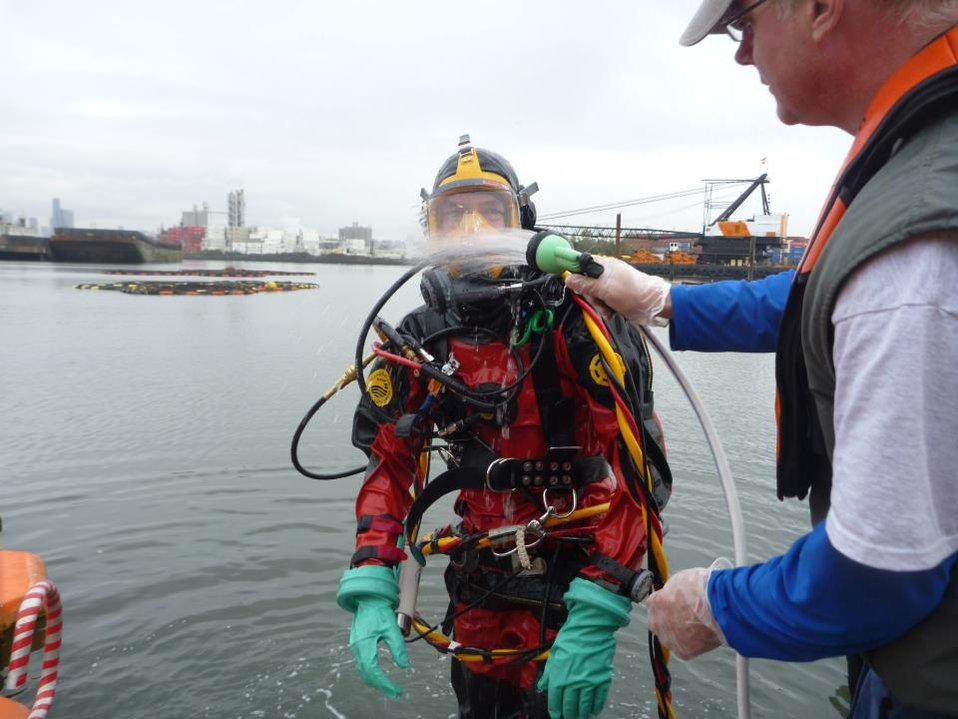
November 13, 2012, Duwamish River, WA Sampling

Due to the river contamination, divers returning to the boat must undergo thorough rinsing with potable water. EPA divers recently demonstrated a passive sampling technique targetting 'pore water' in the Duwamish River, Washington.

Pore Water is defined as: 'the water occupying the spaces between sediment particles ... Contaminants in the interstitial water and in the solid phase are expected to be at thermodynamic equilibrium. This makes interstitial waters useful for assessing contaminant levels and associated toxicity.' - U.S. Environmental Protection Agency, 2001

We also know that pore water can be related to fish tissue data, so sampling in this manner can be very useful in assessing a site cleanup. EPA divers have deployed a variety of passive samplers to support Superfund work. This technique has the capability of integrating data over a longer period of time--making it more likely that a contaminated groundwater plume discharging to a river like this one will be captured, where other techniques may only produce a snapshot.

Lower Duwamish Waterway Superfund Site